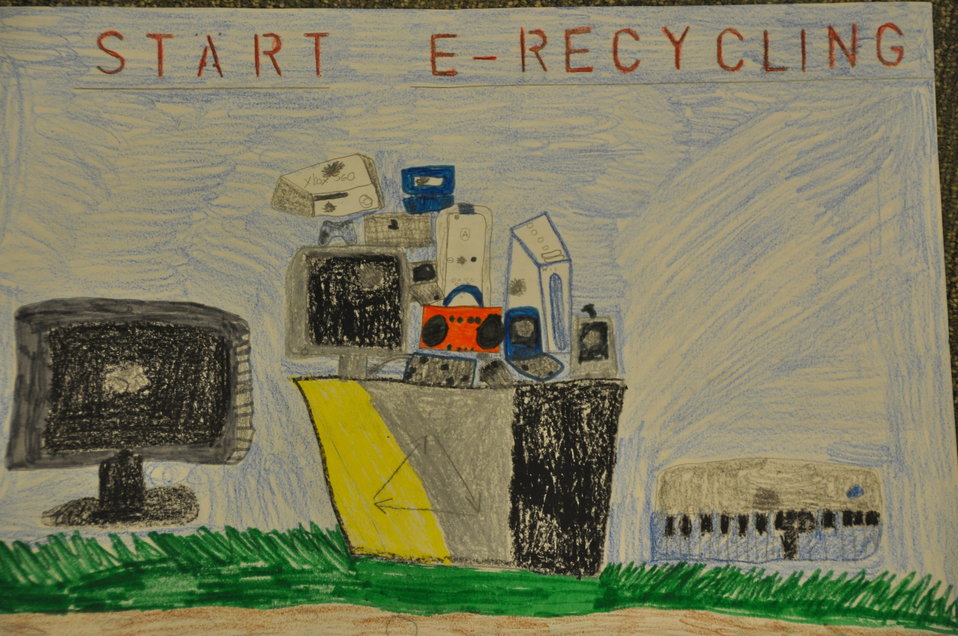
Nathan, Grade 5, Rhode Island